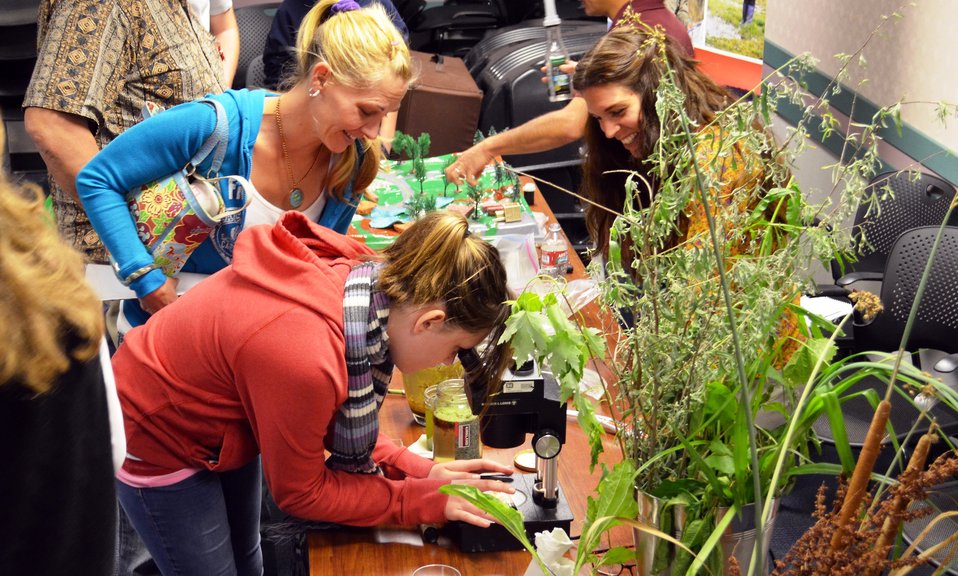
Bring Your Child to Work Day teaches kids about science, technology

Alisha Kerschbaum (right), a regulatory project manager with the U.S. Army Corps of Engineers Sacramento District, explains how the Corps uses soil samples and plants to identify protected wetlands and waterways during the “Bring Your Child to Work Day” event April 24, 2014, at district headquarters in Sacramento, Calif. The district hosted the event to encourage kids to pursue careers in science, technology, engineering and mathematics, or STEM.